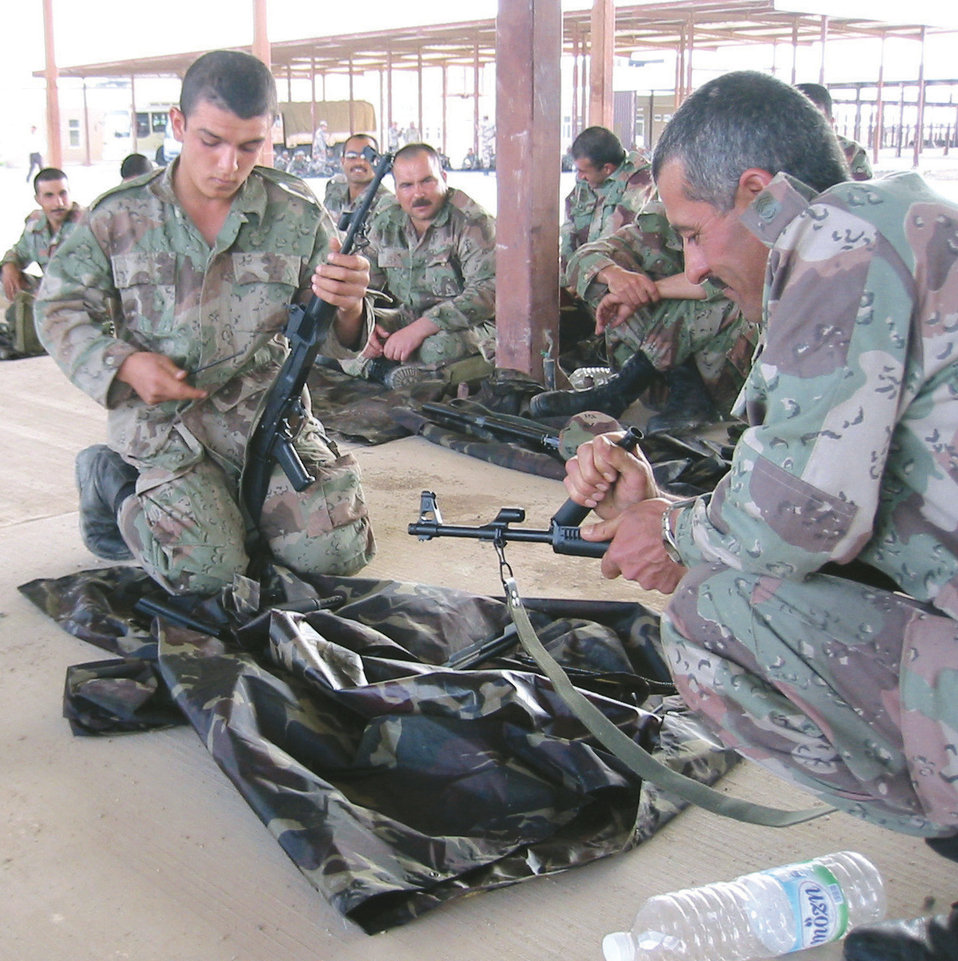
Airmen help train Iraqi soldiers

KIRKUSH MILITARY TRAINING BASE, Iraq -- Iraqi soldiers each reassemble an AK-47 rifle. After the weapons are assembled, instructors ensure that they function properly.